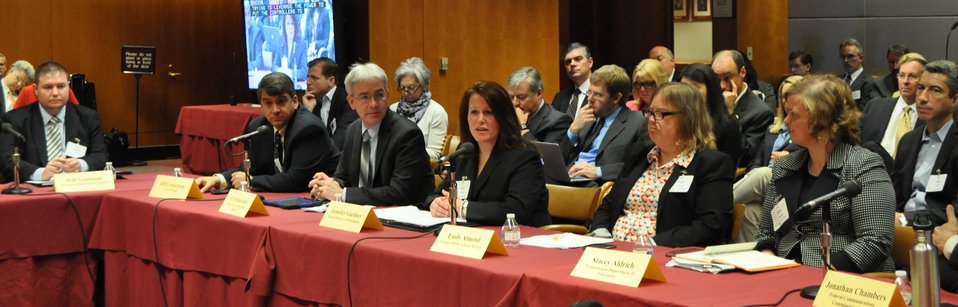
5.6.2014 E-Rate Modernization Workshop

Education and Library Technology Experts Roundtable: Enabling the Lowest “E-rate” for Schools and Libraries